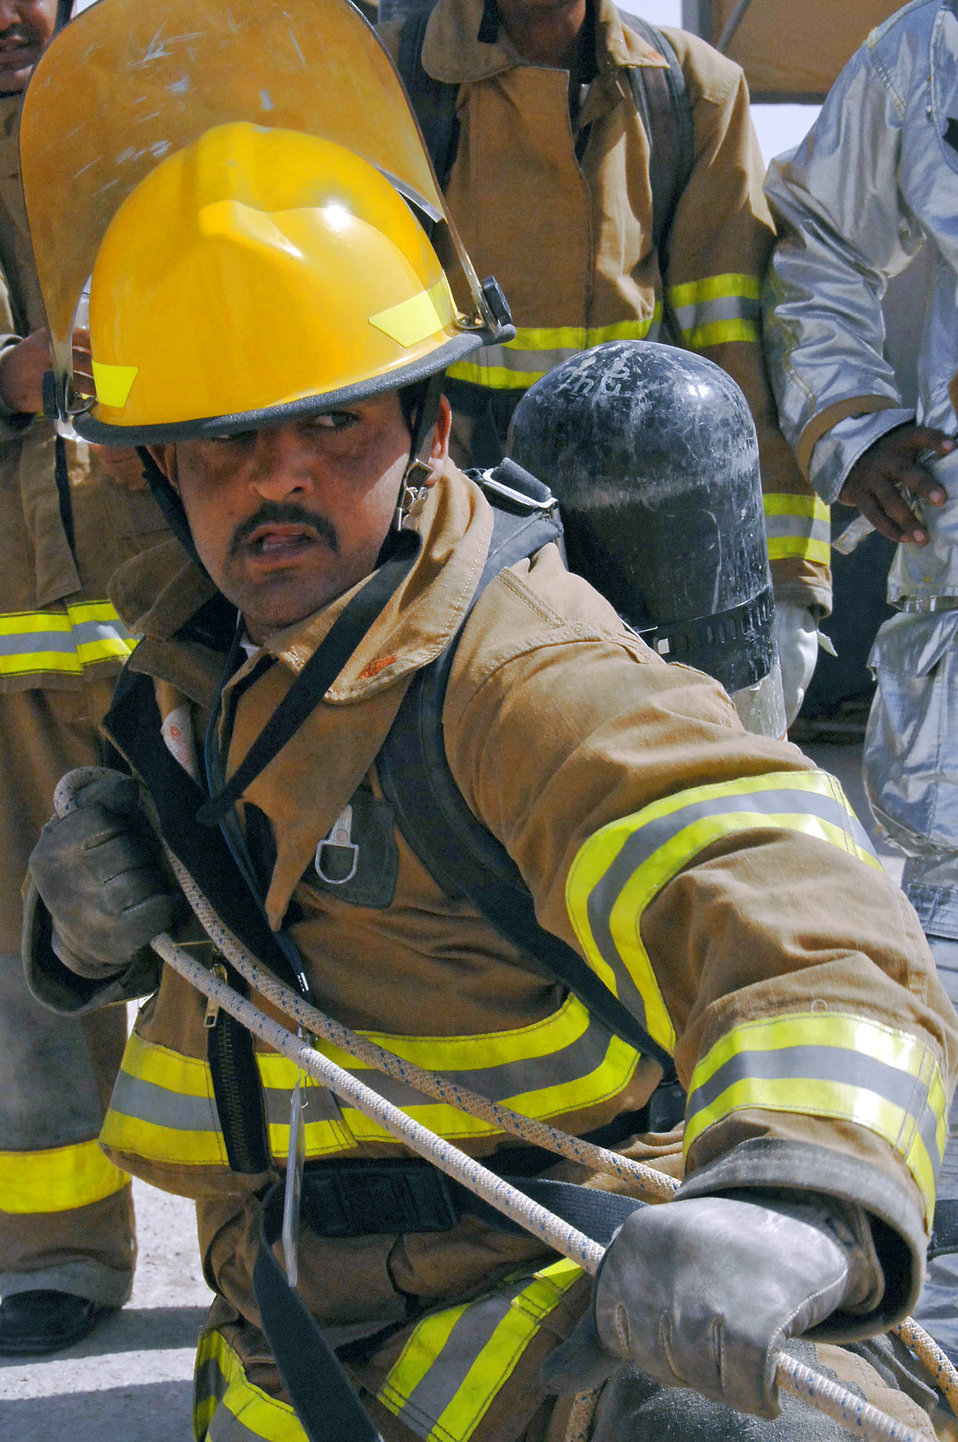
Airmen train Iraqis to save lives

An Iraqi firefighter participates in a